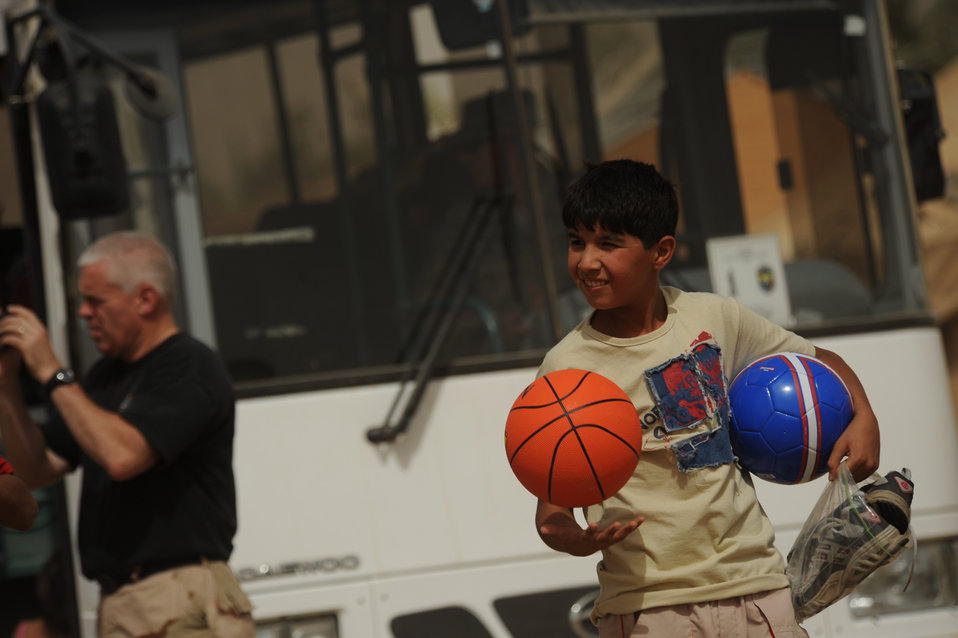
Sather Airmen foster relationships with local community

A young Iraqi boy holds a basketball and soccer ball donated by Airmen June 6 Sather Air Base, Iraq. The gifts were donated and delivered as part of the Good Neighbor Program at Sather AB.